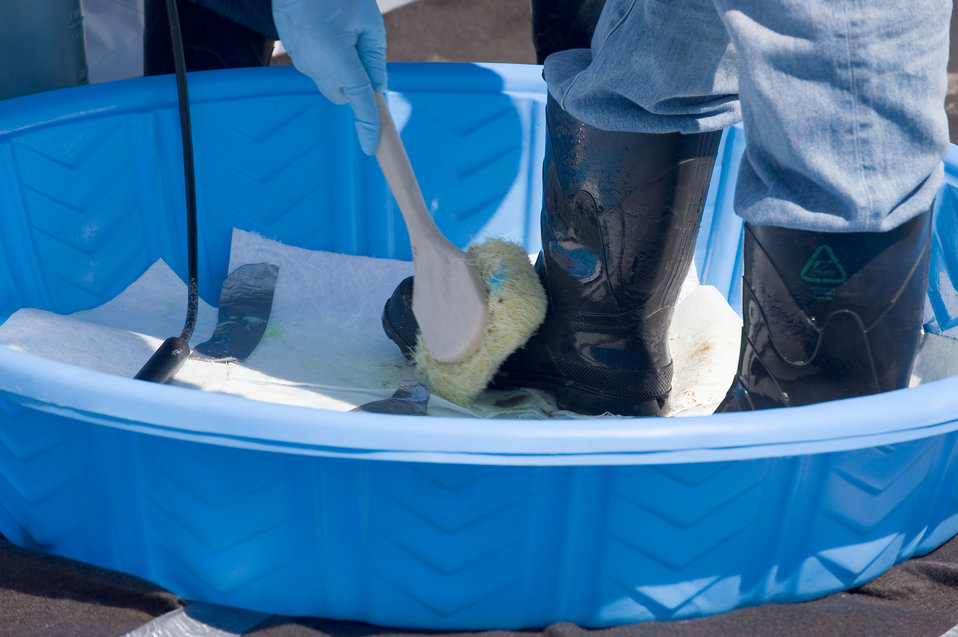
August 7, The importance of washing down

Oil Spill clean up workers decontaminate their clothing and boots before entering clean areas. The wash water is collected and properly disposed of.